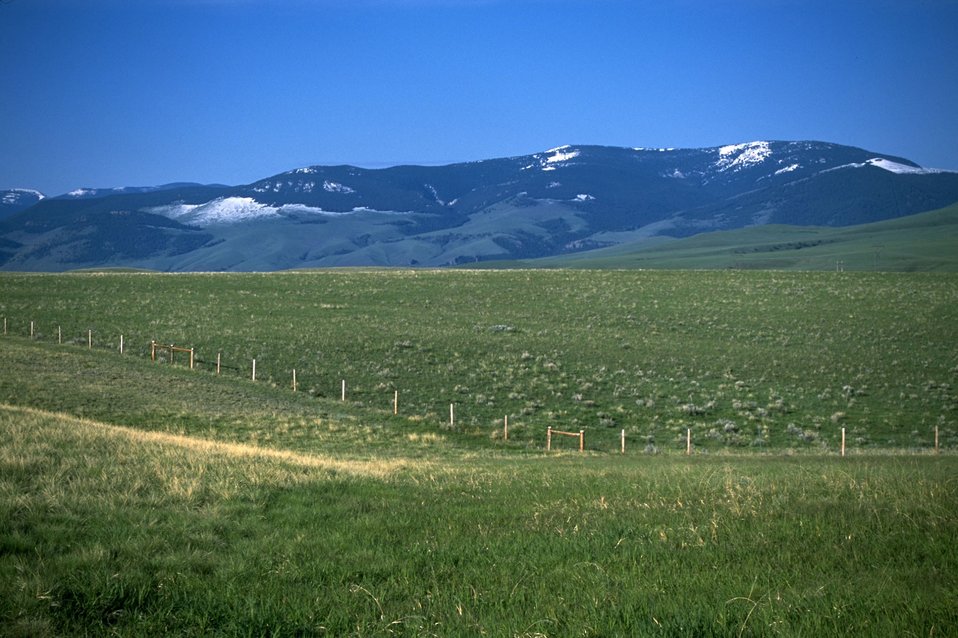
Snow-topped mountains looking down on a grassy meadow